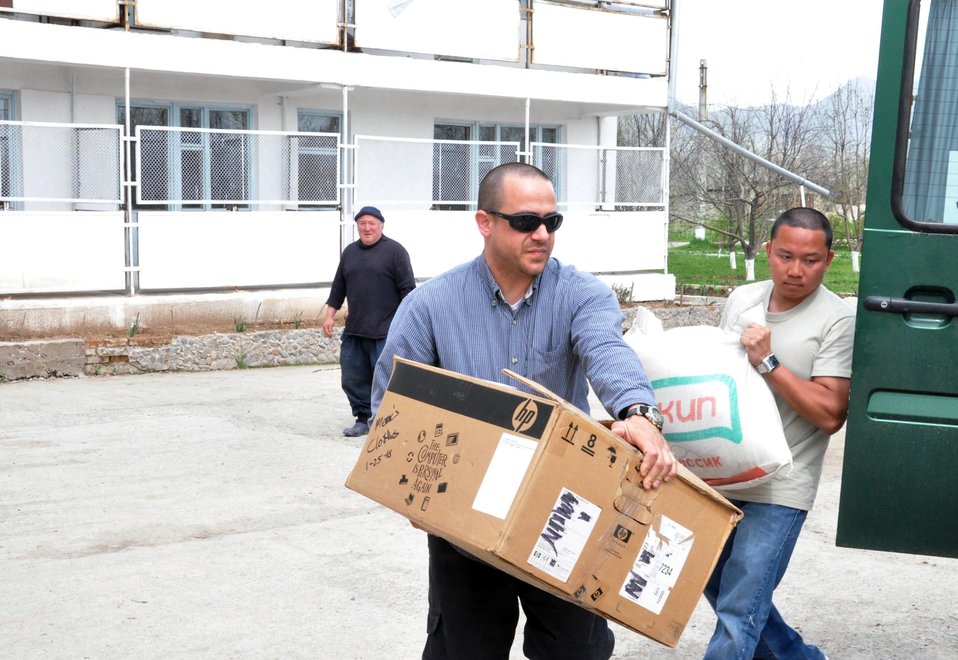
Airmen provide humanitarian assistance in Kyrgyz village

Jeff Villemarette and Staff Sgt. Jeff Legaspi (right) carry food, clothing and entertainment items for the residents of the TokMok Psychoneurologic Boarding House April 14, 2010, in Iskra Village, Kyrgyzstan. This boarding house hosts 255 male patients and is badly in need of repair and basic amenities. Airmen from the Transit Center at Manas visited to bring some humanitarian assistance items and to see how they can help the boarding house in the future.